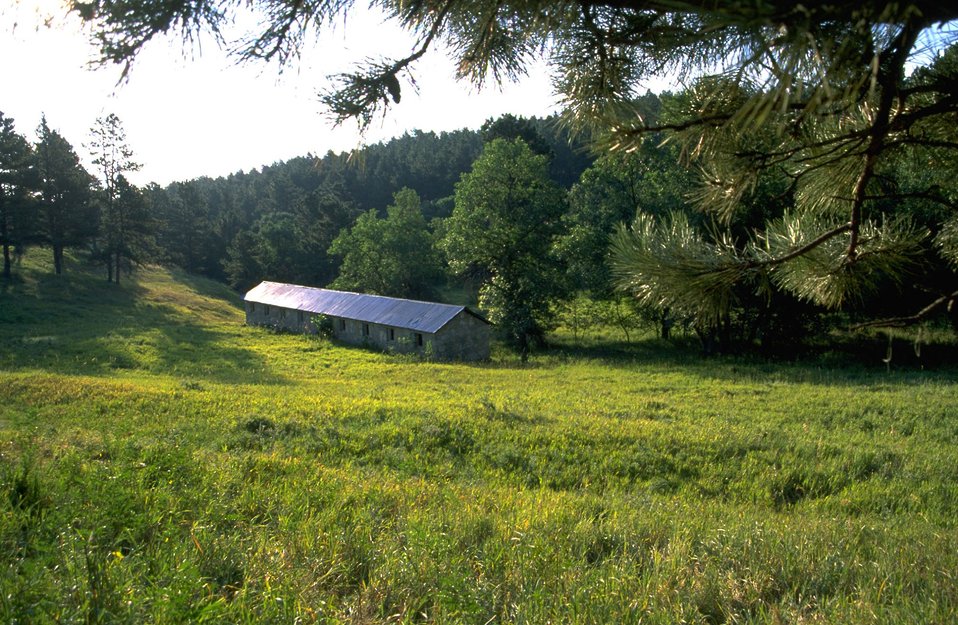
Long Stone Building at the south end of Fort Meade